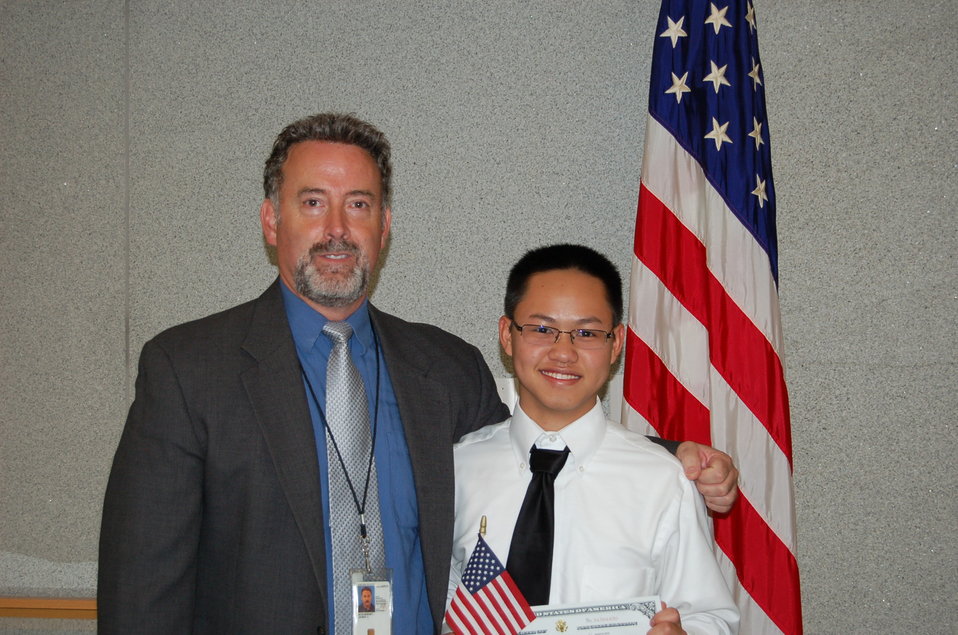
New Citizens